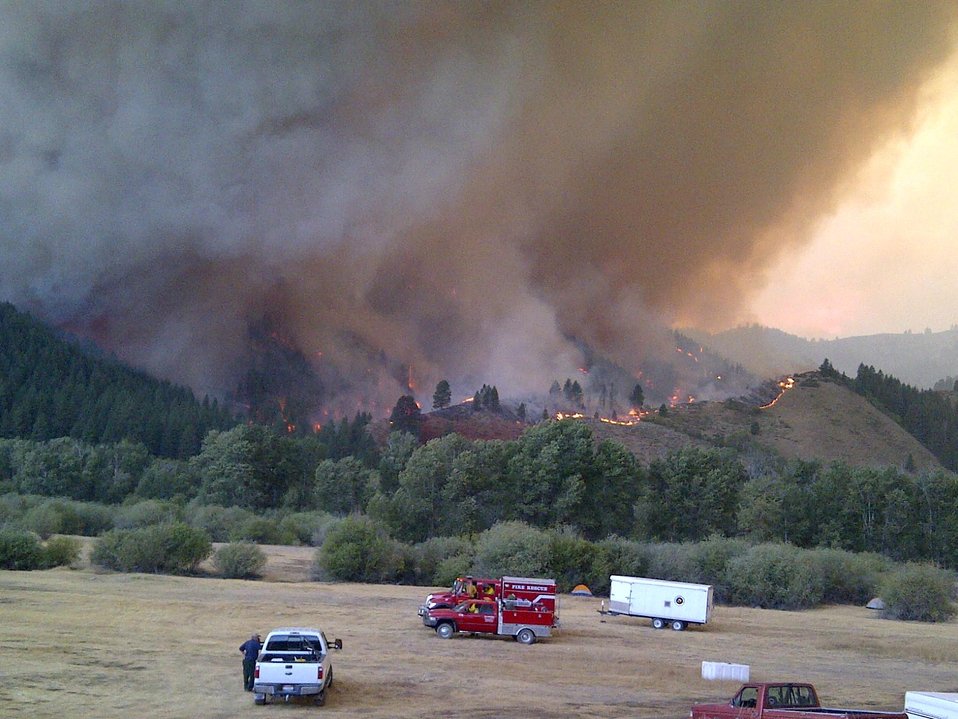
The Elk Complex Fire threatens the Incident Command Post on Aug. 8, 2013. The Elk Complex Fire in the Boise National Forest near Pine, ID began on Aug. 08, 2013 by lightning has consumed approximately 98,413 acres and is approximately 5% contained.